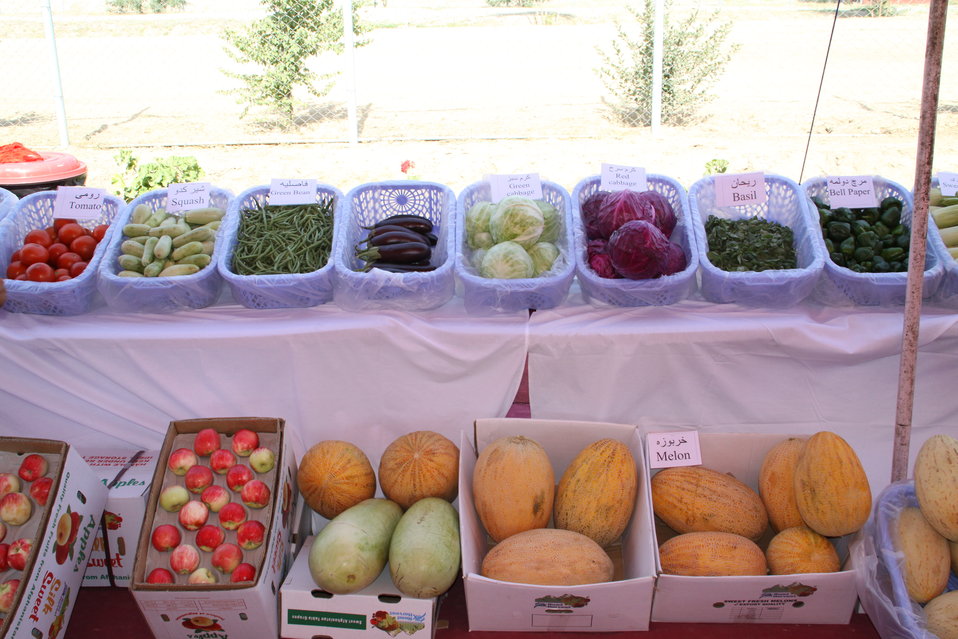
Badam Bagh Farm